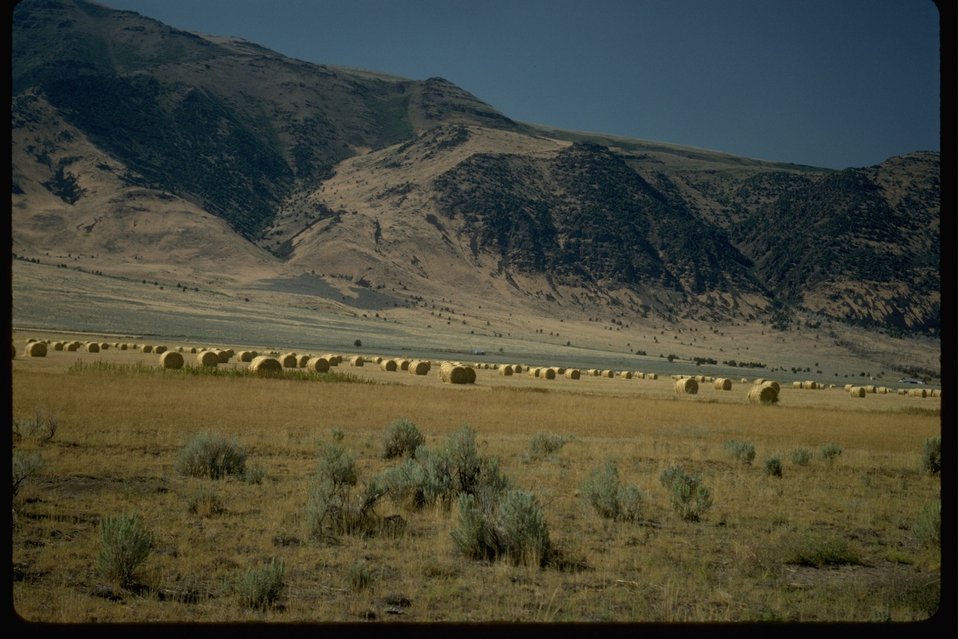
Hay at Mann Lake Ranch just below the East Face of Steens Mountain.